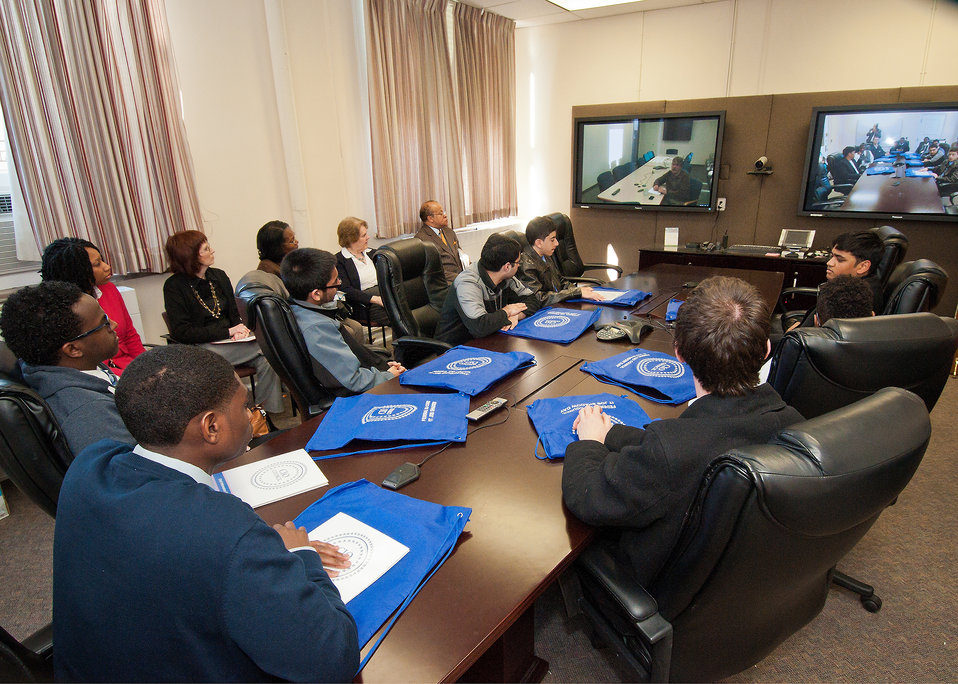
Students from Edison Academy in Fairfax, VA listen to U.S. Department of Agriculture (USDA) Office of Chief Information Officer (OCIO) Acting Associate Chief Data Center, National Information Technology Center, Denver CO James Stevens via a video link from USDA in Washington, D.C. during the USDA OCIO Information Technology (IT) Job Shadow Day held by the USDA OCIO to introduce local high school students to careers in information technology in Washington, D.C. on Tuesday, Apr. 2, 2013.